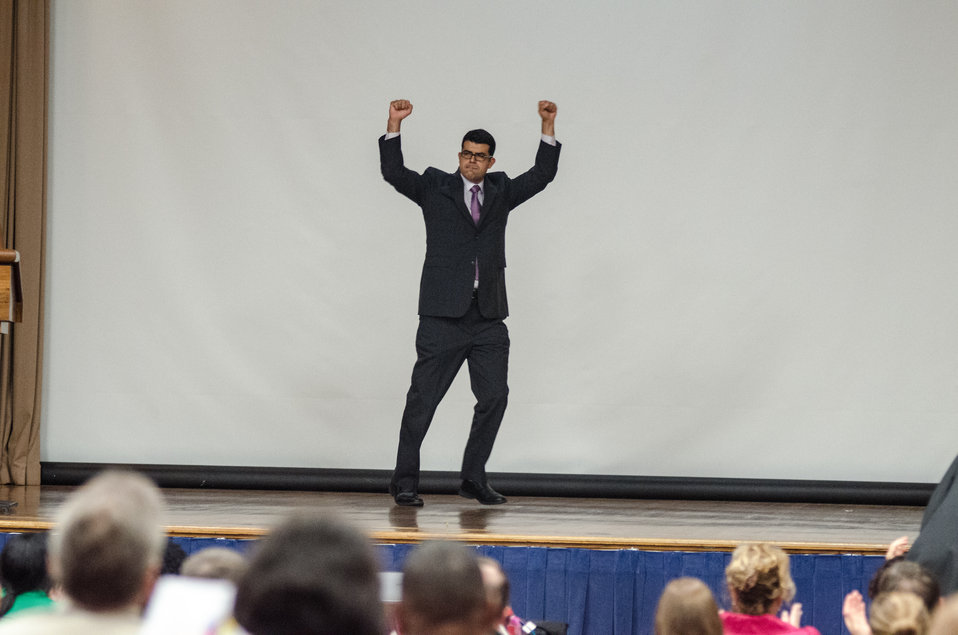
Senior leaders make a stage entrance to the theme of “Rocky” during the U.S. Department of Agriculture’s (USDA) Rural Development (RD) 2nd Annual Cultural Transformation kickoff opening ceremony and forums, themed “Employees Influencing Change,” on Tuesday, Aug. 13, 2013 at USDA in Washington, D.C.